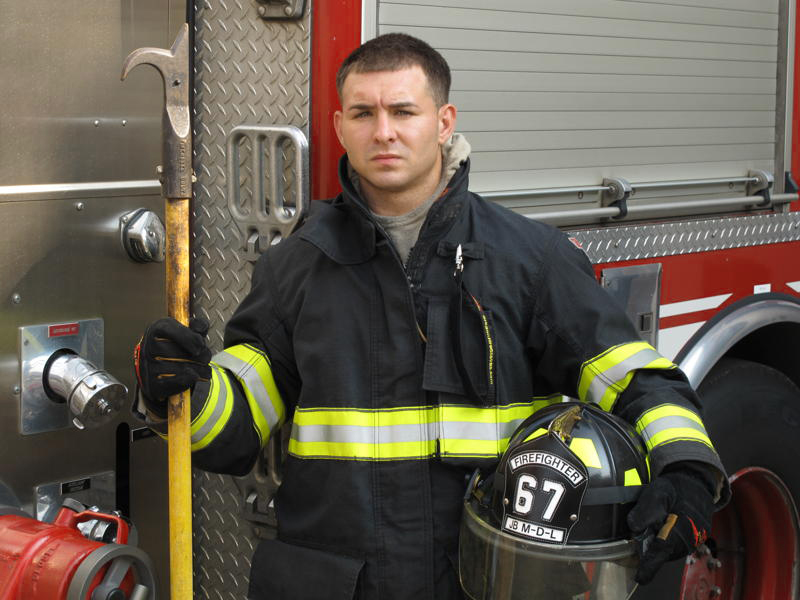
Airman rescues baby from fire

Senior Airman John Muirhead rescued an infant during a dwelling fire July 2, 2010, in Jamesburg, N.J. Airman Muirhead is a driver operator/fire fighter with the 87th Civil Engineer Squadron fire department.